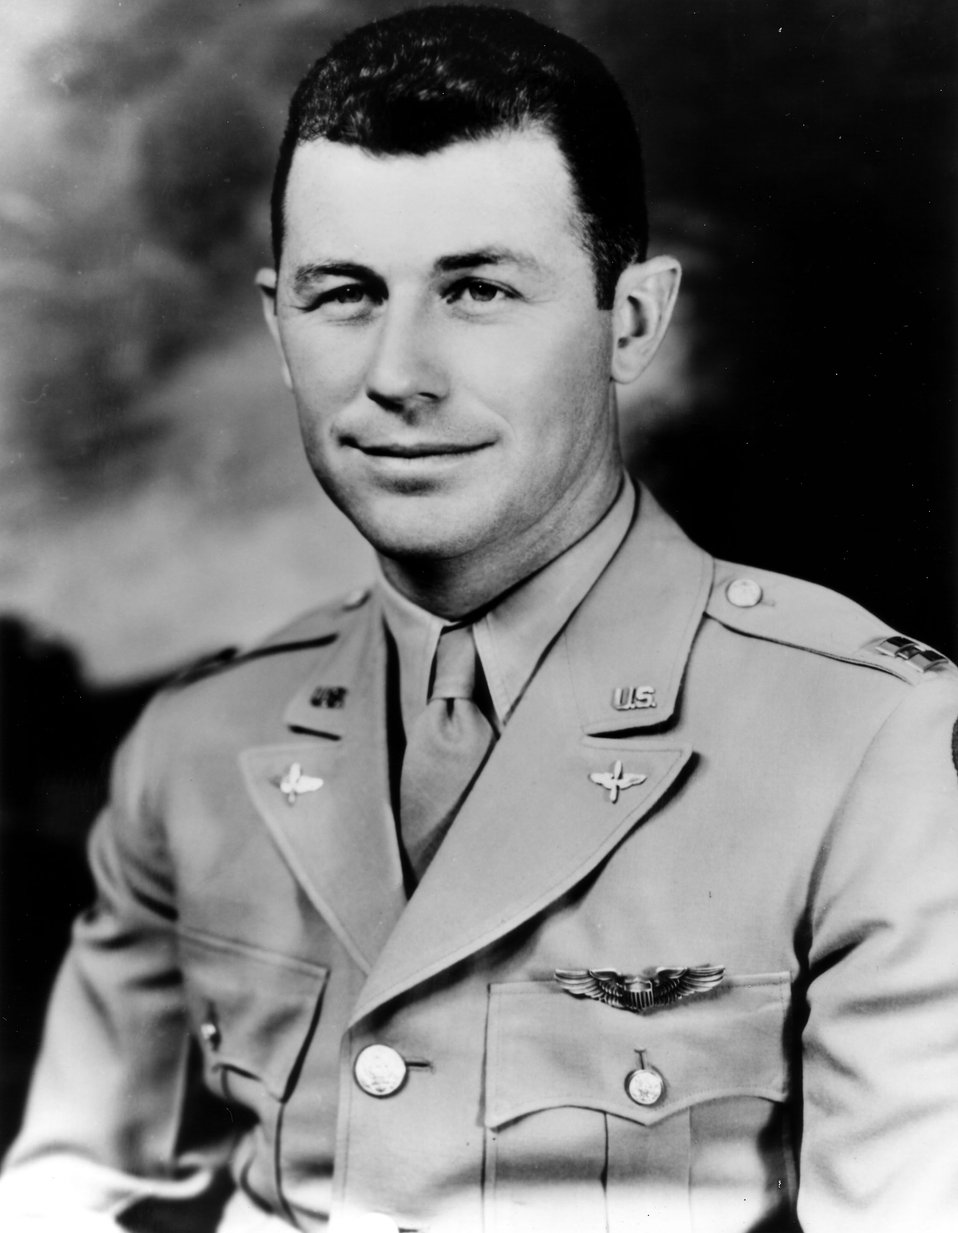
Capt. Charles E. Yeager

Capt. Charles E.